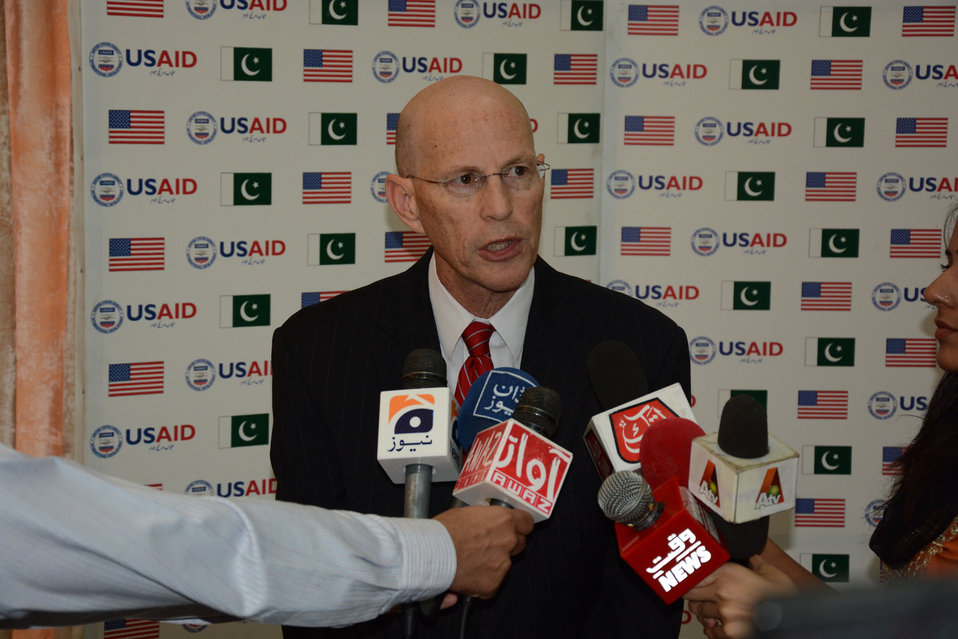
IIUI Teacher Education Scholarships 01